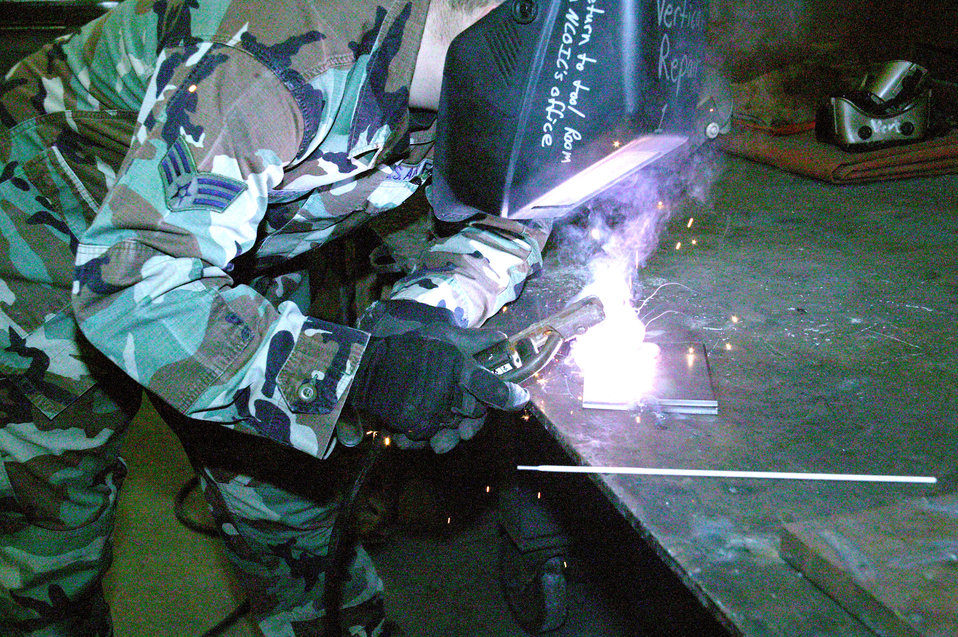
Vertical shop keeps base in good condition

Senior Airman Luke Lucas arc welds two pieces of metal in the 20th Civil Engineer Squadron's vertical shop at Shaw Air Force Base, S.C.